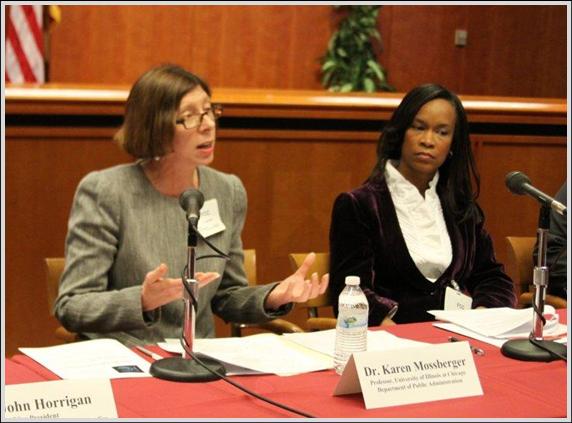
Dr. Karen Mossberger and Dr. Valerie Wilson

Panel 1: What have we Learned from Academic Studies on How to Close the Broadband Adoption Gap